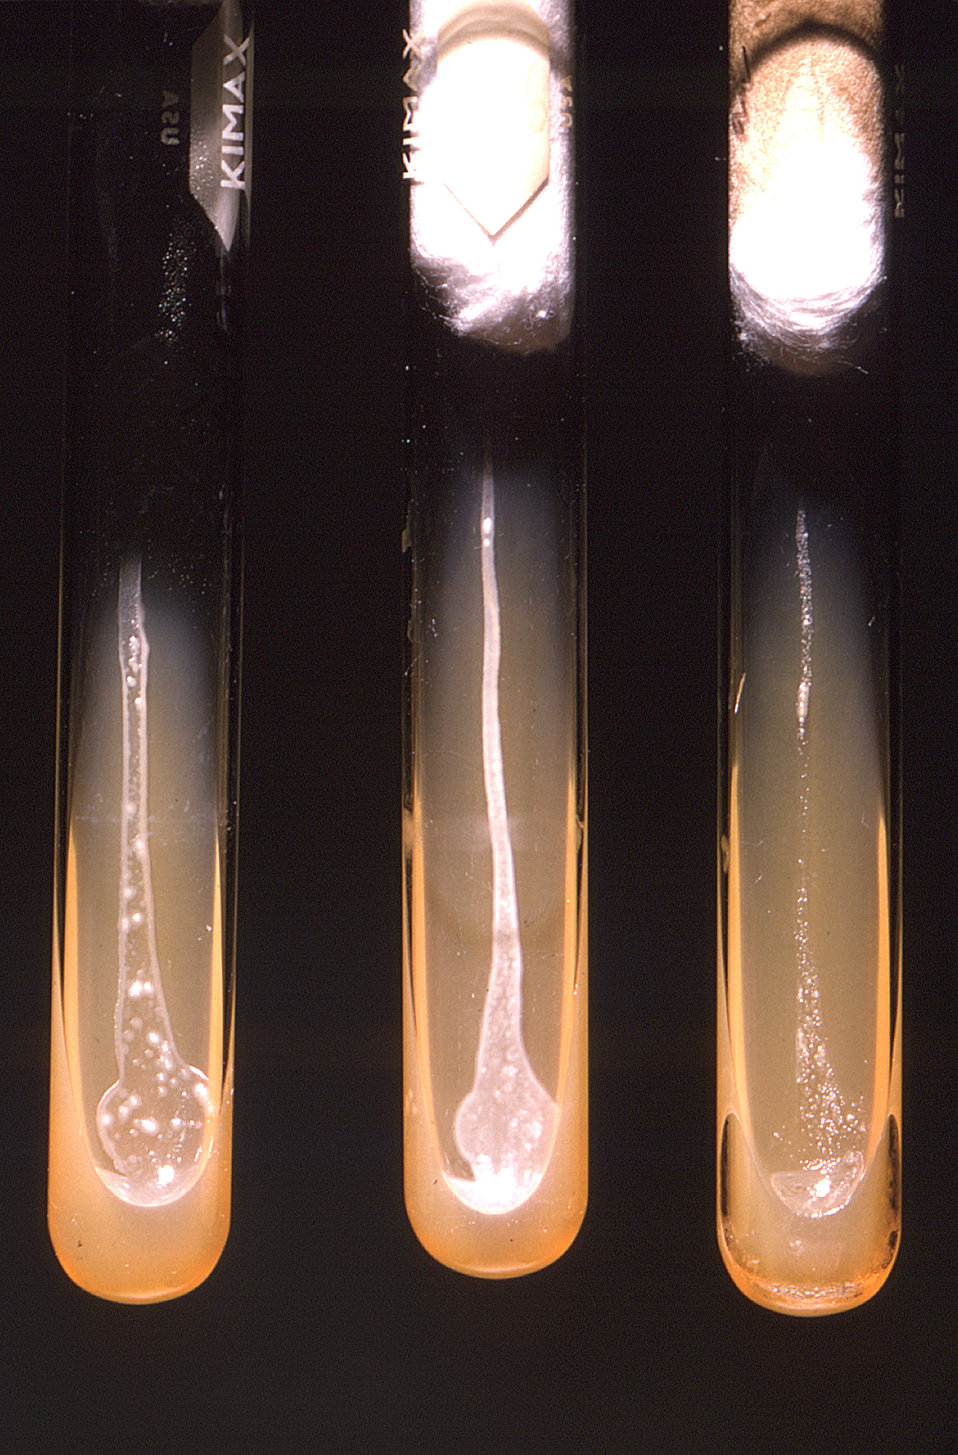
From left to right, these three test tubes represent three different growing environments within which Actinomyces viscosus bacteria were grown: aerobic (with oxygen), carbon dioxide (CO2), and anaerobic (without oxygen) plus CO2.